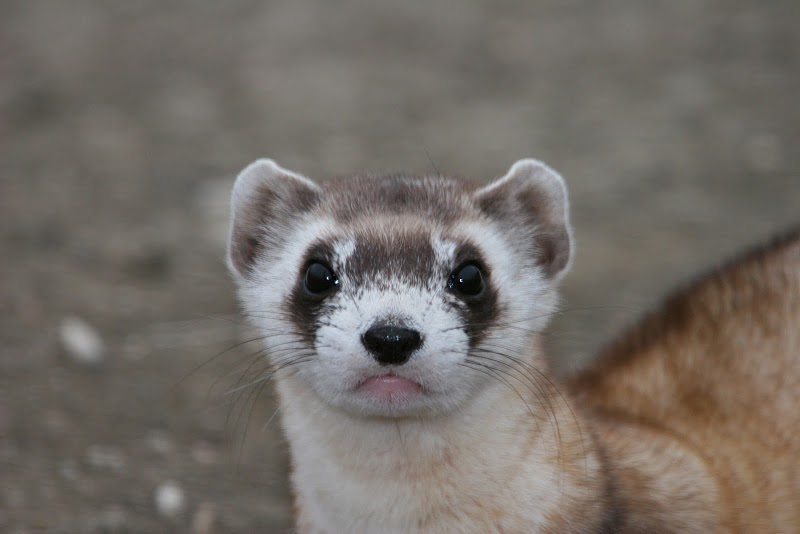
Black-footed Ferret